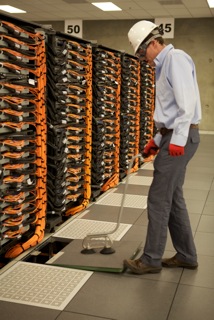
At Argonne National Laboratory, the panel underneath MIRA is inspected the cooling devices and wiring that will keep the supercomputer running.